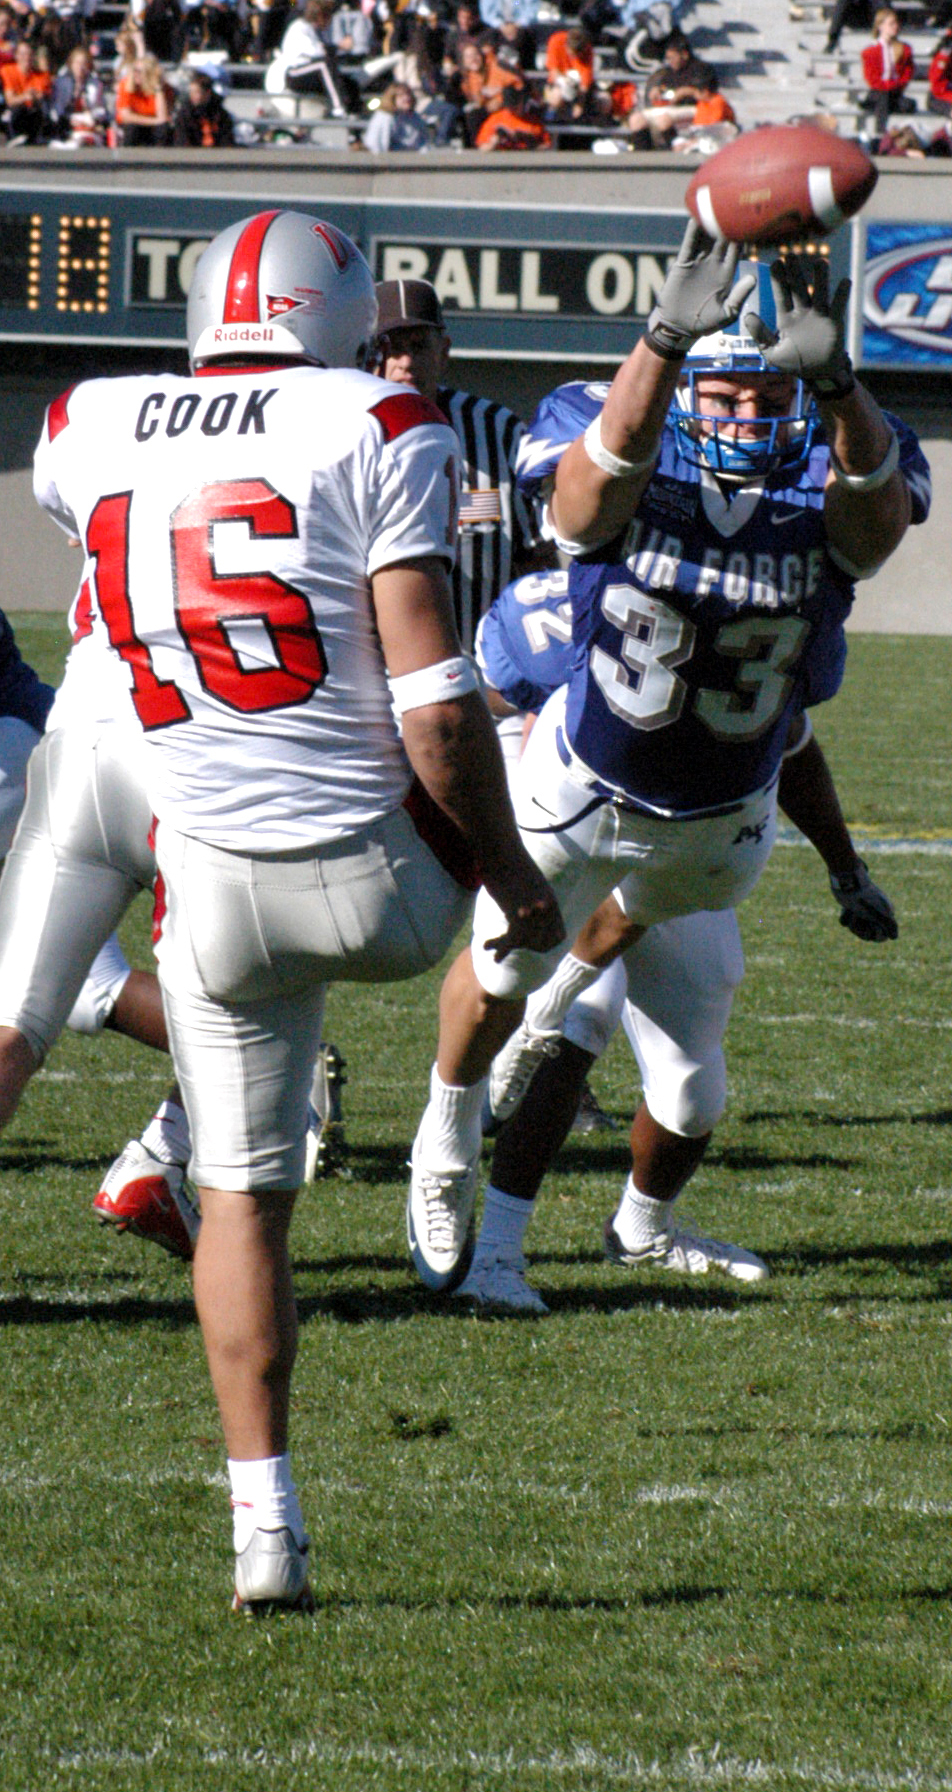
UNLV at academy

U.S. AIR FORCE ACADEMY, Colo. -- U.S. Air Force Academy's Kris Holstege nearly gets his hands on a punt from the University of Nevada, Las Vegas, punter during the Falcons win Oct. 11, 24-7.